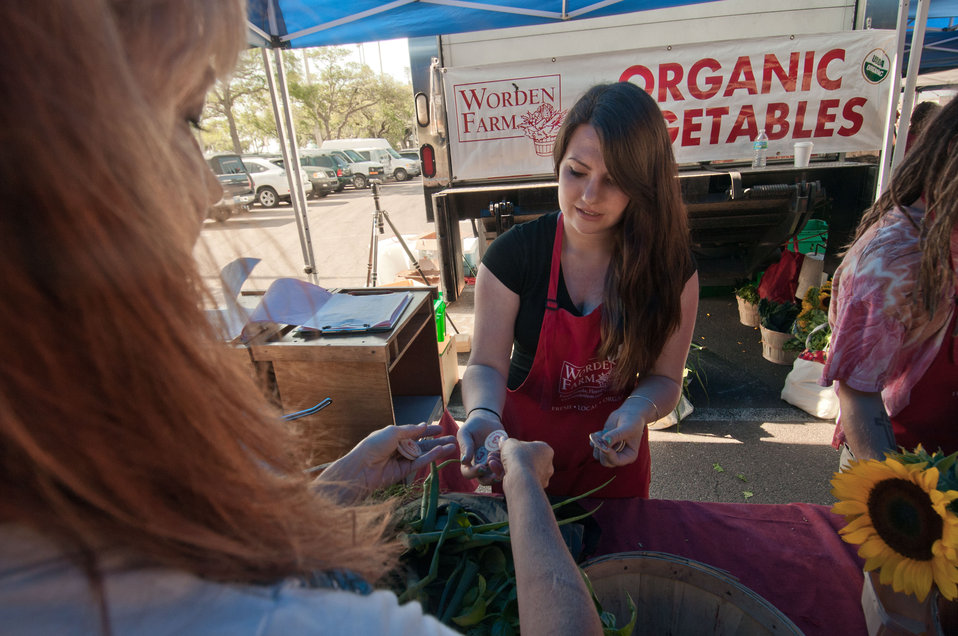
Joney O'Hare, left, uses Saturday Morning Market tokens to pay Worden Farm's Julia Rozell for her purchase that are funded with her U.S. Department of Agriculture (USDA), Supplemental Nutrition Assistance Program (SNAP) benefits at the Saturday Morning Market, in St. Petersburg, FL on April 14, 2012. Worden Farm (www.wordenfarm.com) says, “We at Worden Farm are happy to work with the USDA SNAP program. The tokens are exchanged with vendors for food, food producing plants or seeds.. Vendors then return the tokens to the market organizer for an equal dollar amount that is electronically deposited into their bank account. Worden Farm is a family farm that provides certified organic produce to Southwest Florida through community supported agriculture (CSA) membership programs and retail sale at several farmer’s (community) markets. Depending on the state, EBT cards can also hold value from other food and nutrition partners that can add a certain value or provide a certain degree of match to the value of other programs add to the card.